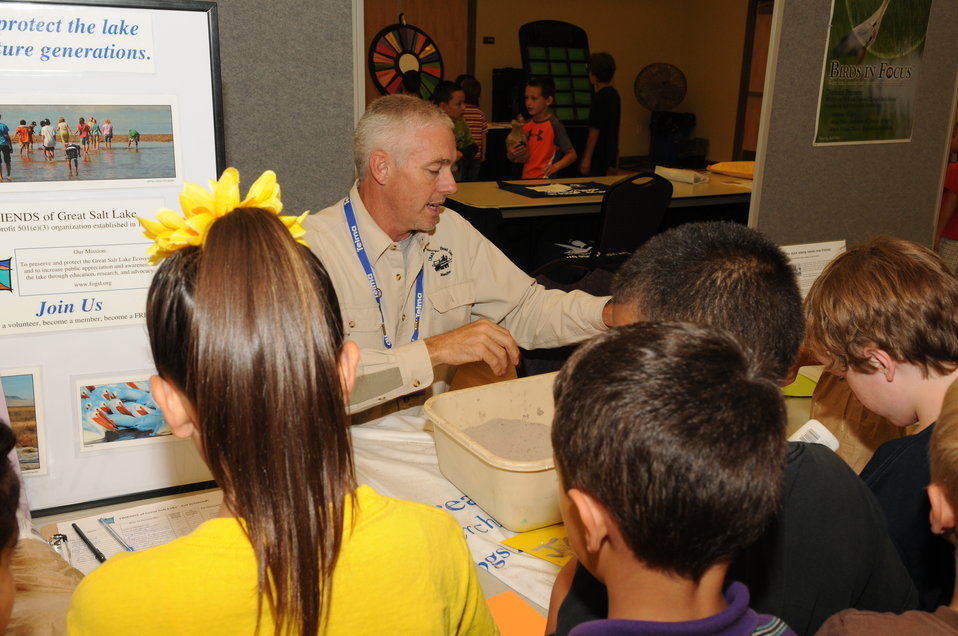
Youth Outreach

The U.S. Fish & Wildlife Service sponsored the 2012 Federal Duck Stamp Art Contest September 28 and 29 in Ogden, Utah, at Weber State University. A panel of five judges was responsible for choosing the art work used to design the 2013-2014 Migratory Bird Hunting and Conservation Stamp.